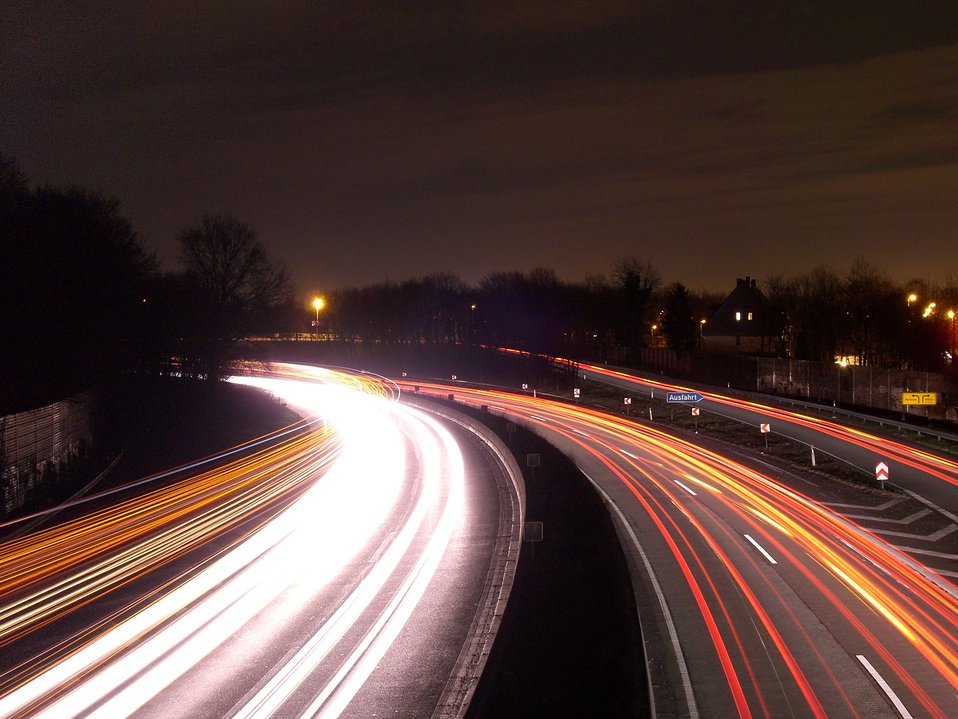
Deutsch: BAB 40 in Styrum bei Nacht